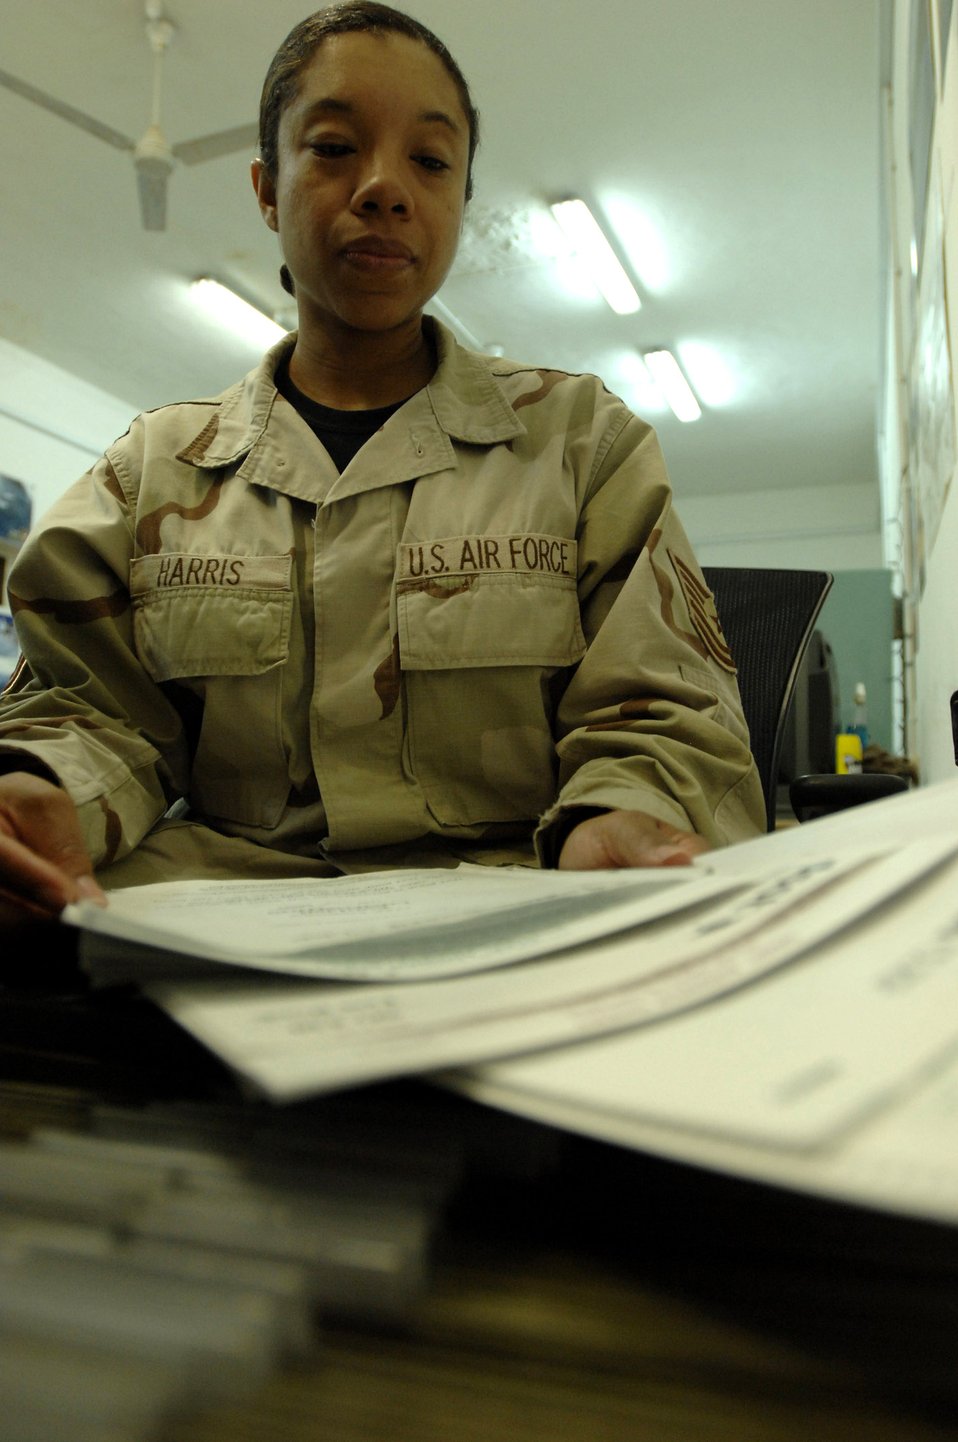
Education opportunities open doors for deployed members

Tech. Sgt. Lisa Harris takes out a test form from the file Dec. 11 at Ali Base, Iraq. The 407th Expeditionary Services Squadron Education Center gives servicemembers the opportunity to further their educational and career development. Sergeant Harris is assigned to the 407th Expeditionary Services Squadron and is deployed from Andrews Air Force Base, Md.